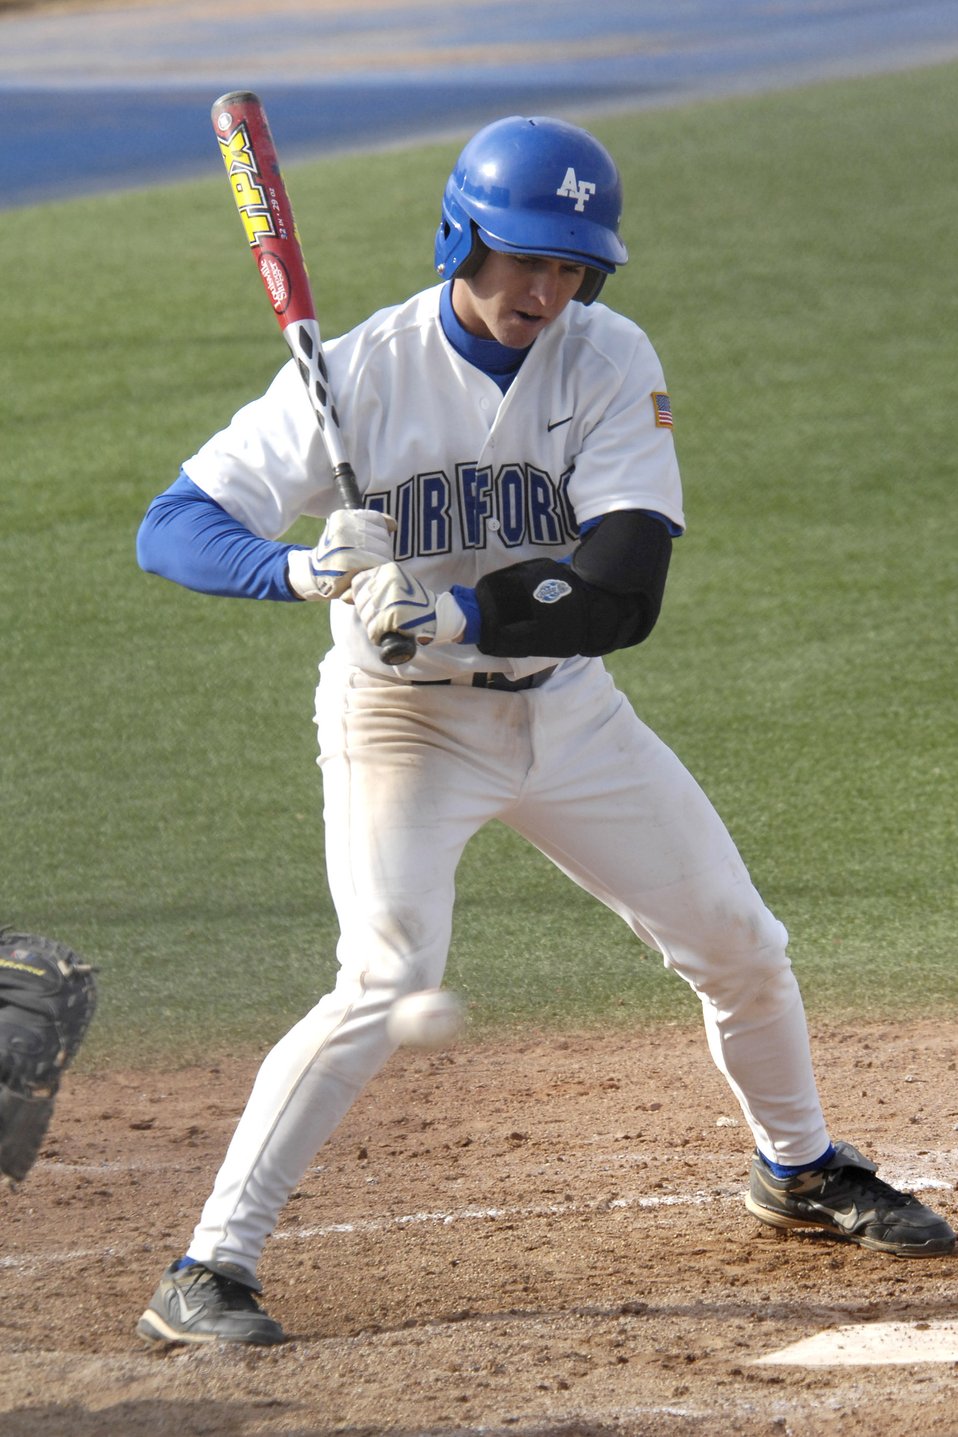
Air Force Rallies To 10th Inning Win Over Colorado Christian

Freshman second baseman Nathan Carter at bat as the Falcons rallied to a 10th inning 9-8 win against Colorado Christian in non conference baseball action at the Academy's Falcon Field. Carter went 1 for 5 as Air Force tallied 12 hits and did not commit an error in the field on the day. The Falcons improve to 11-19 on the season.